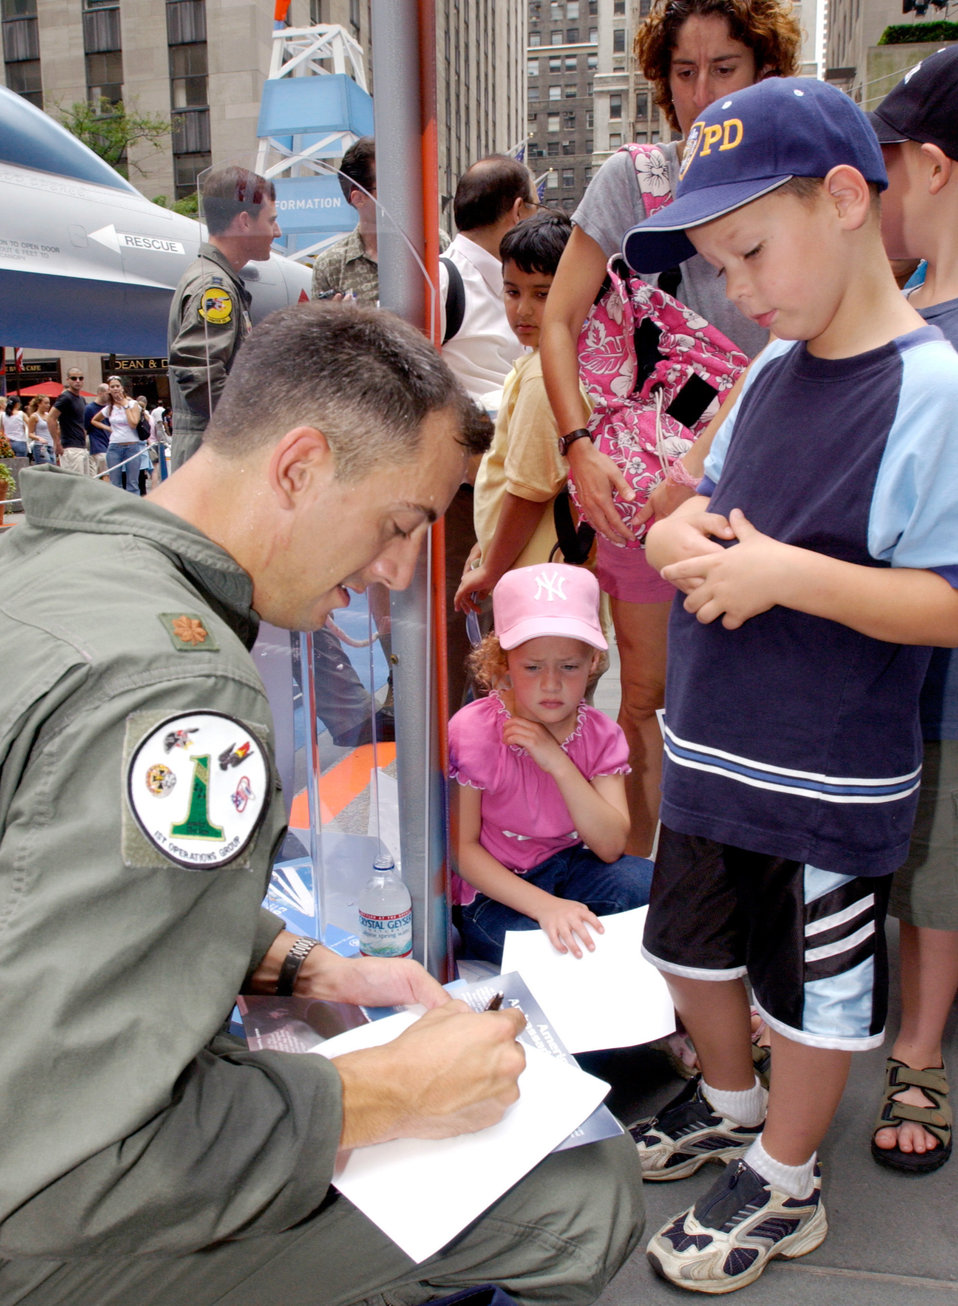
Can I have your autograph?

NEW YORK -- Maj. Cory Bower signs an autograph for Harrison, age 6, during a Centennial of Flight celebration Aug. 9 at Rockefeller Center here. Bower is an F-15 Eagle pilot assigned to the 27th Fighter Squadron at Langley Air Force Base, Va.